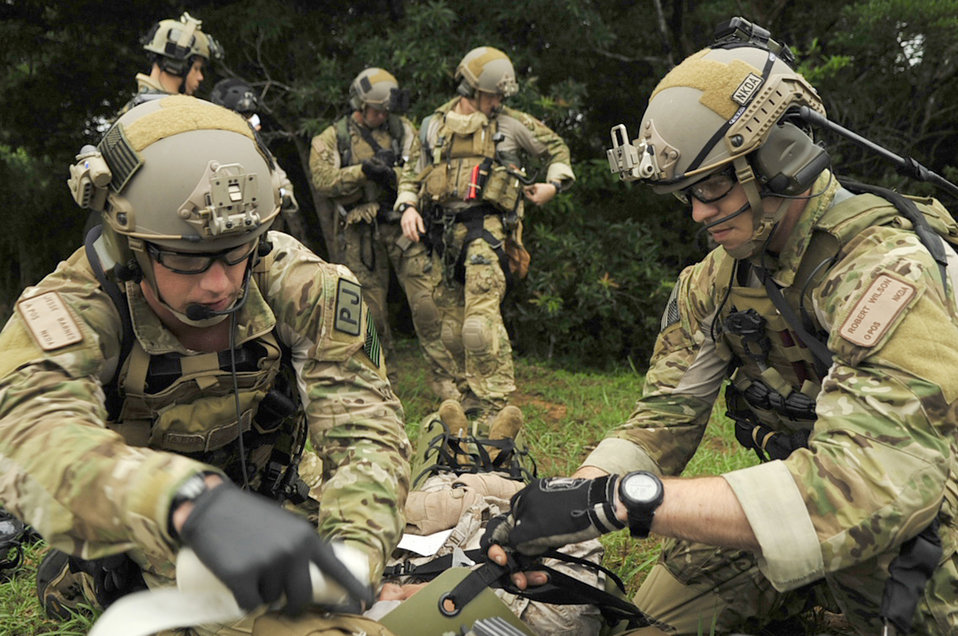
Airmen learn essential skills during joint combat training exercise

Staff Sgt. Jesse Barnes (left) and Capt. Nicholas Wilson prepare to transport a simulated wounded Marine to safety during a joint training exercise July 28, 2010, at Kadena Air Base, Japan. The Airmen are pararescuemen with the 31st and 33rd Rescue Squadrons and were training for an upcoming deployment.